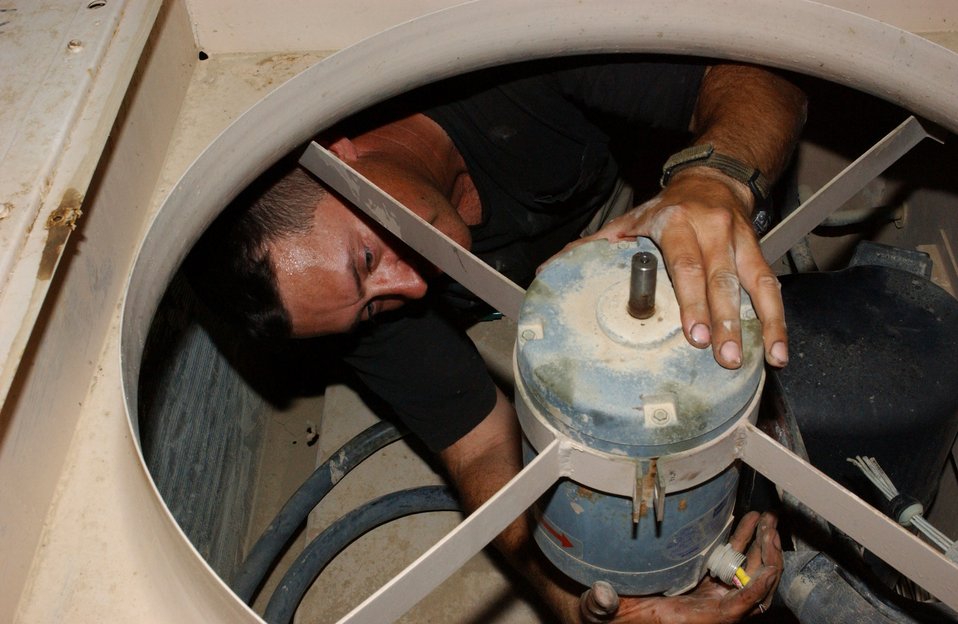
HVAC: Keeping you cool

Tech. Sgt. Chuck Biever removes a condenser fan motor for replacement at Ali Base, Iraq. Sergeant Biever is with the 407th Expeditionary Civil Engineer Squadron heating, ventilation and air conditioning flight. He is deployed from the Wisconsin Air National Guard's 128th Air Refueling Wing.